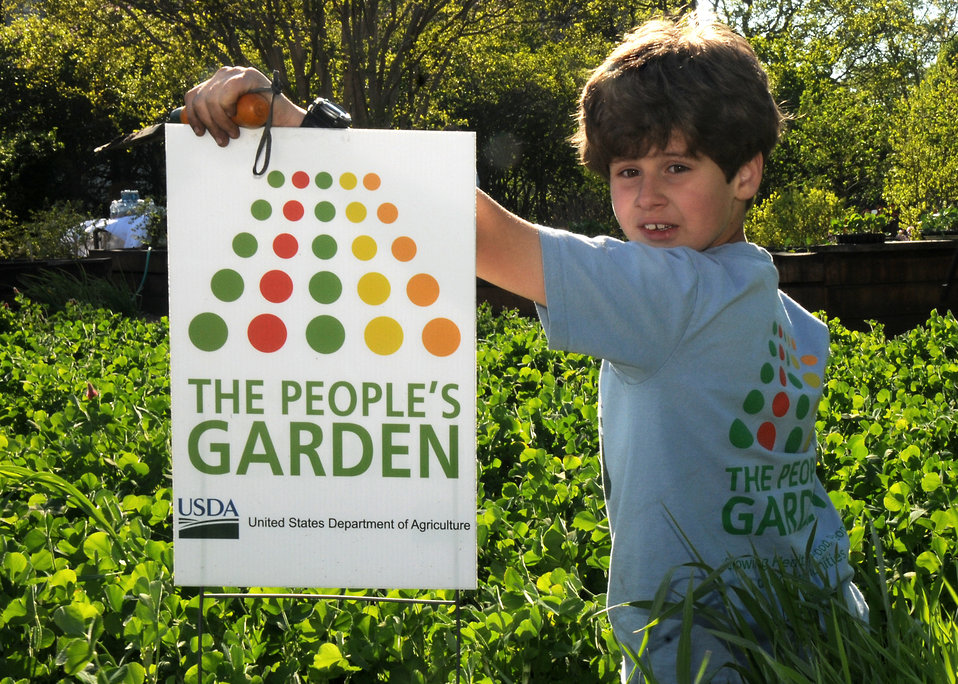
The son of a U.S. Department of Agriculture (USDA) employee kneels amongst a cover crop of clover at the People’s Garden on Friday, Apr. 9, 2010. USDA photo 10di1300-94